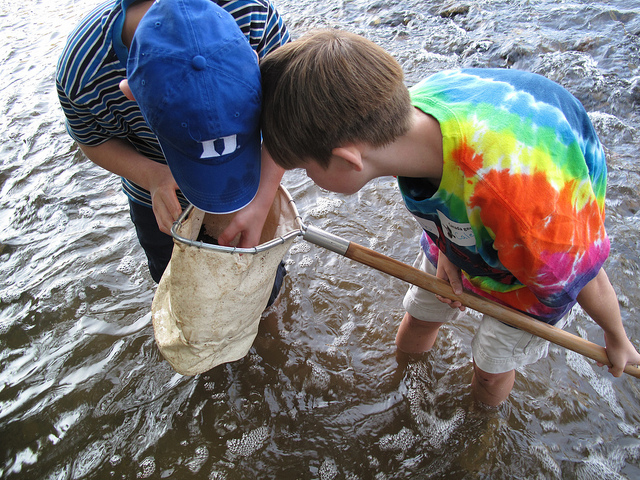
two boys and a net